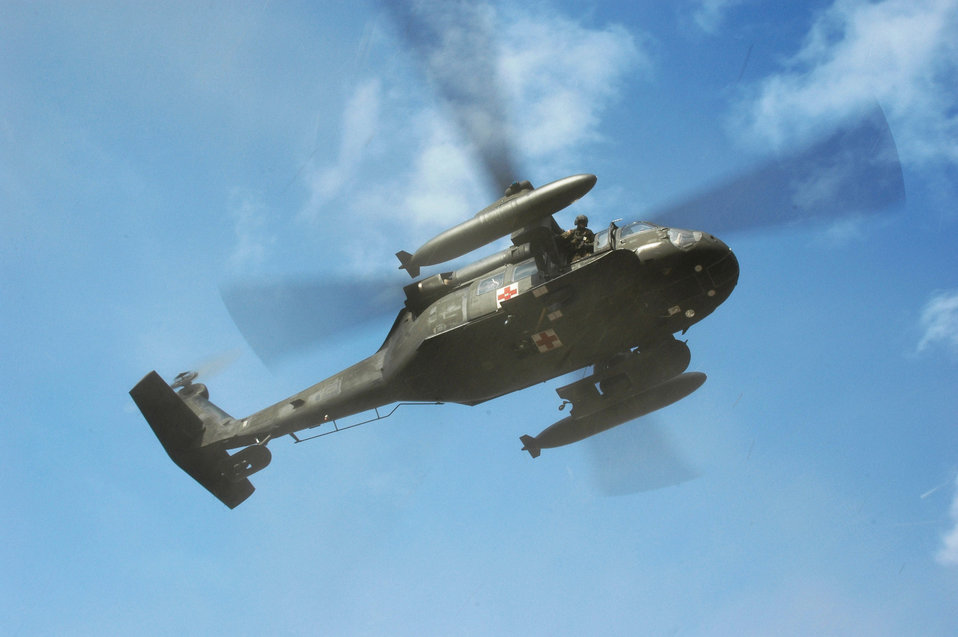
Army aids in aerial evacuation during North Pole exercise

A crew member from an Army UH-60 Black Hawk helicopter from 1st Battalion, 52nd Aviation regiment scans the landing zone used to evacuate